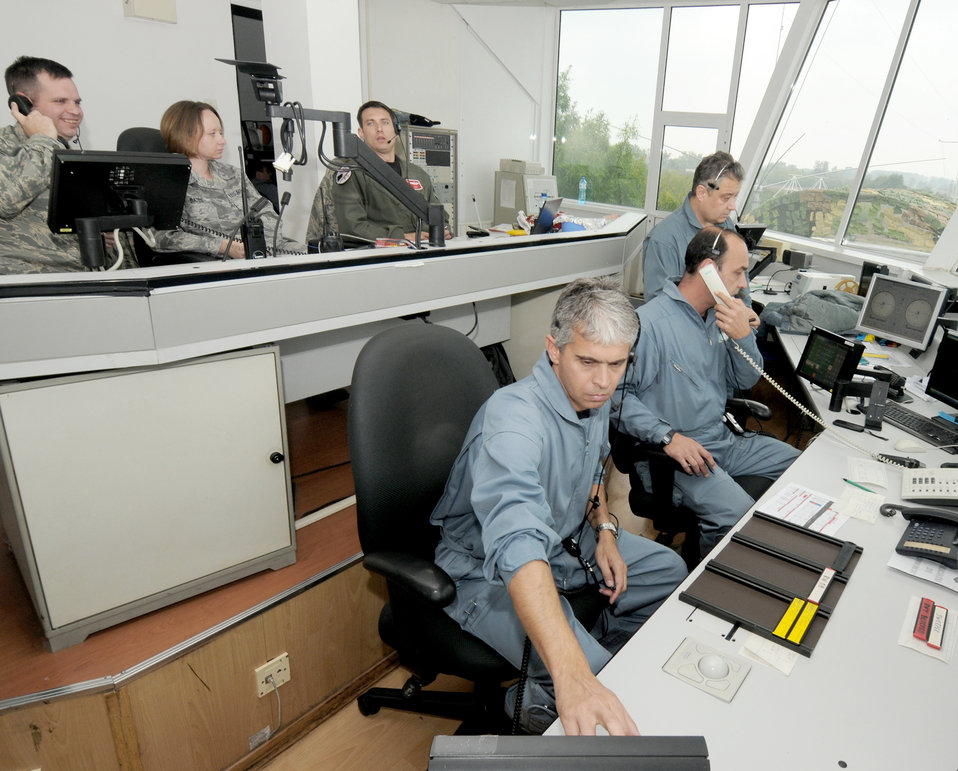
US, Bulgarian ATC

Bulgarian and U.S. Air Force air traffic controllers keep in constant contact with F-16 Fighting Falcons pilots on approach during Operation Thracian Star Oct. 12, 2010, in Bulgaria. The operation was a three-week, combined exercise that gave both U.S. and Bulgarian airmen the opportunity to train together and strengthen relationships